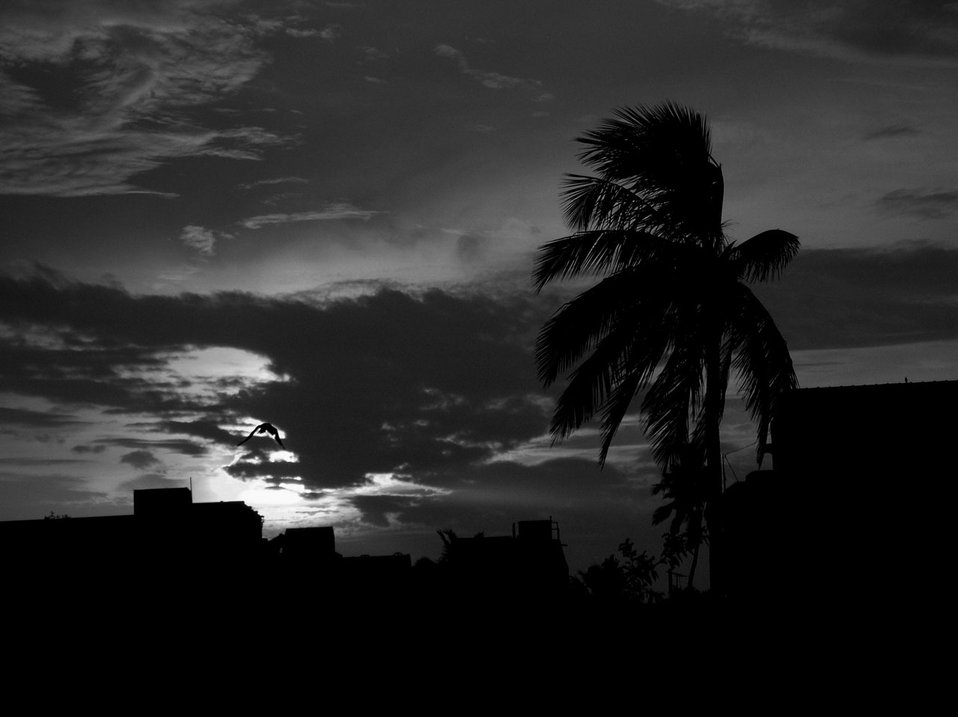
Monsoon arrived

Just before rain.